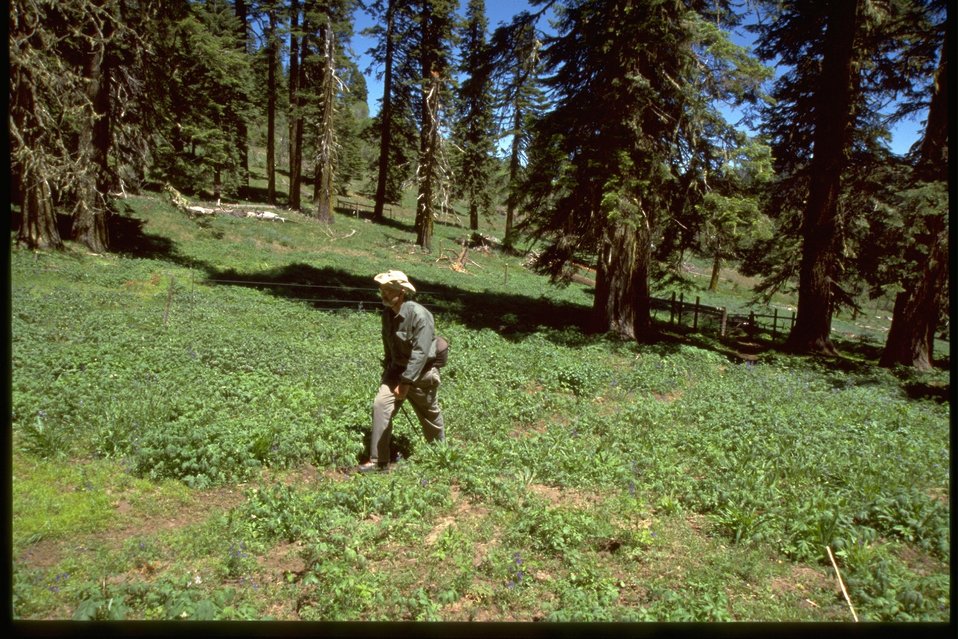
Hikers on the Pacific Crest Trail.